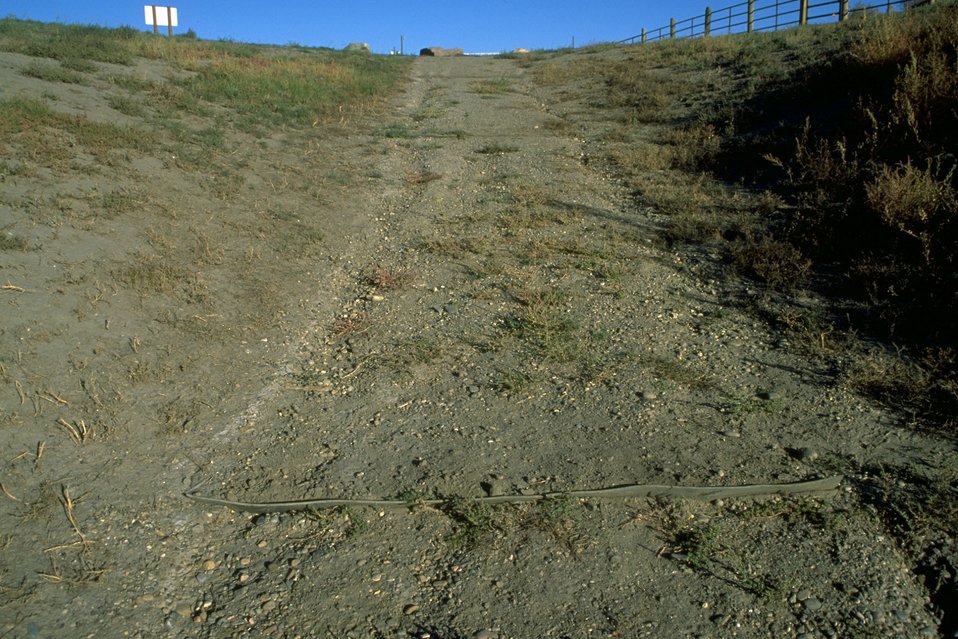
Erosion bar in canoe launch at Fort Benton